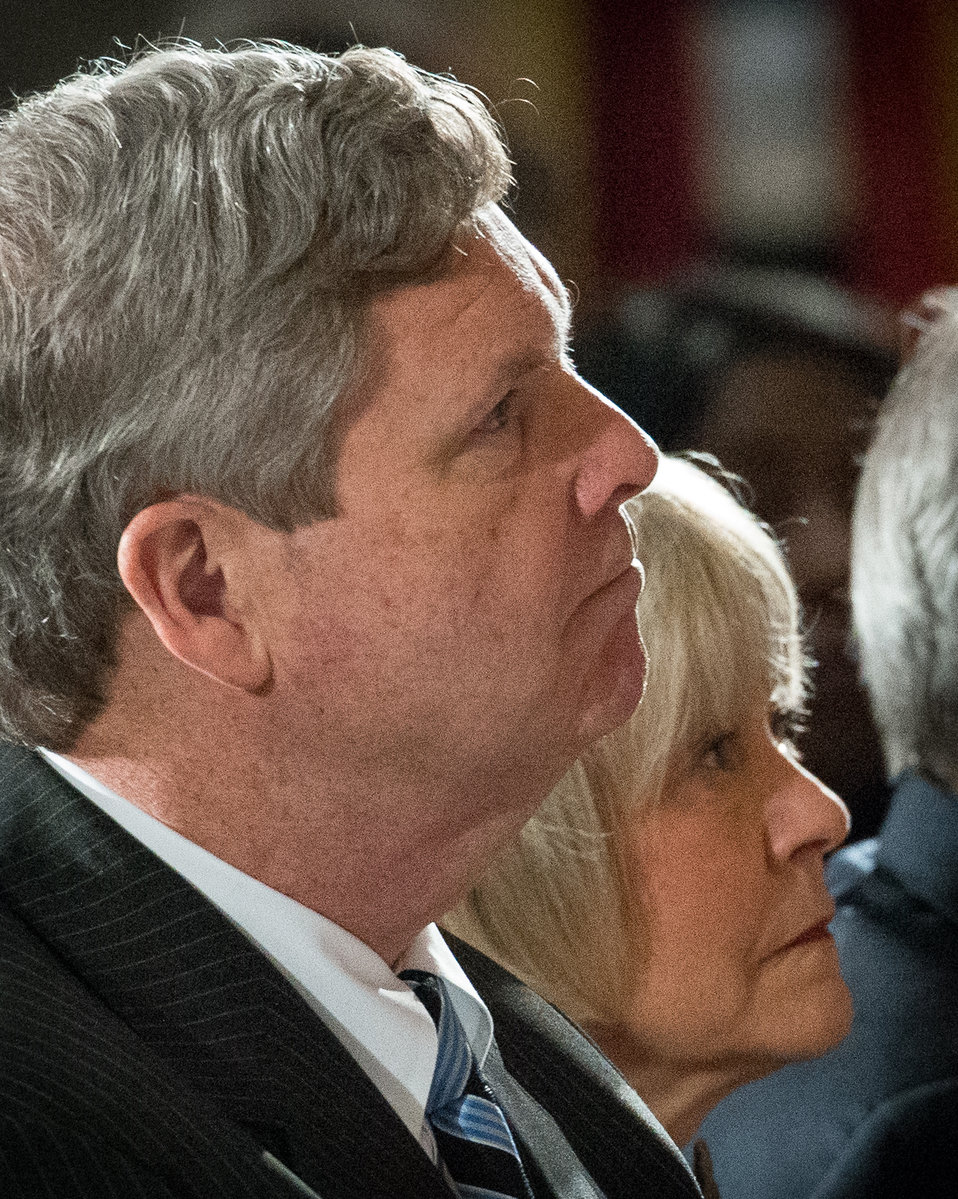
Agriculture Secretary Tom Vilsack and wife U.S. Agency for International Development (USAID) Senior Advisor for International Education Mrs. Christie Vilsack, at the Dr. Norman E. Borlaug statue dedication in the National Statuary Hall at the U. S. Capitol in Washington, D.C. on Tuesday, Mar. 25, 2014. Today commemorates 100 years since Dr. Borlaug’s birth. Through his scientific and humanitarian achievements, Nobel Laureate Dr. Norman E. Borlaug (1914-2009) has been credited with saving millions of people from starvation in developing countries. His collaborative work with scientists in Mexico on a high-yielding, disease resistant dwarf wheat sparked the Green Revolution of the 1960s. The National Statuary Hall Collection in the U.S. Capitol is composed of statues donated by individual states to honor persons notable in their history.